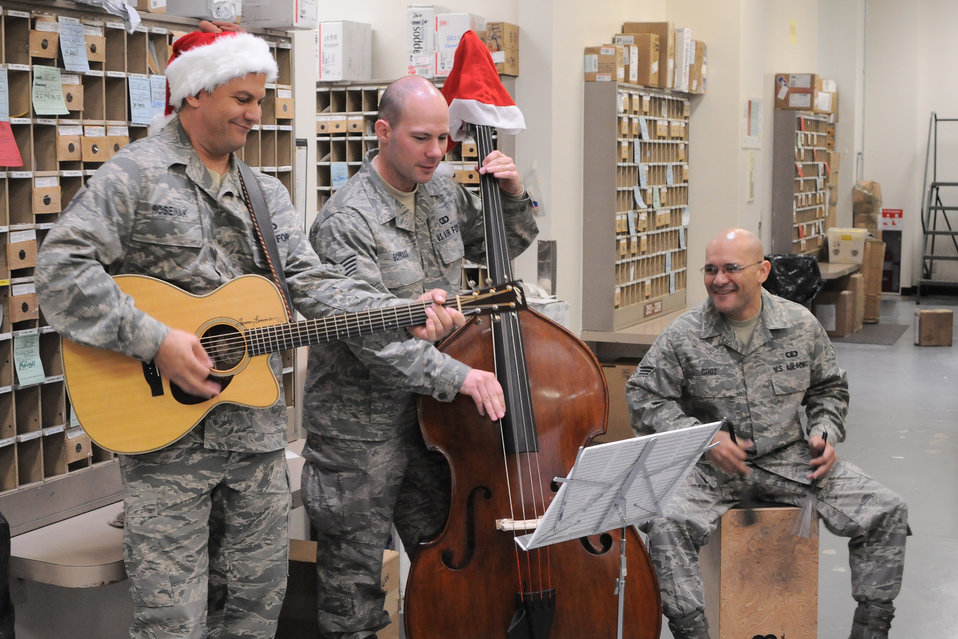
Music before the rush

Members of the U.S. Air Force Band of the Pacific-Asia play holiday music Dec. 7, 2010, in the mail delivery section of the post office at Yokota Air Base, Japan. The workers expect an influlx of packages to start arriving now until the end of the month. Each year, the band performs holiday music throughout the base.